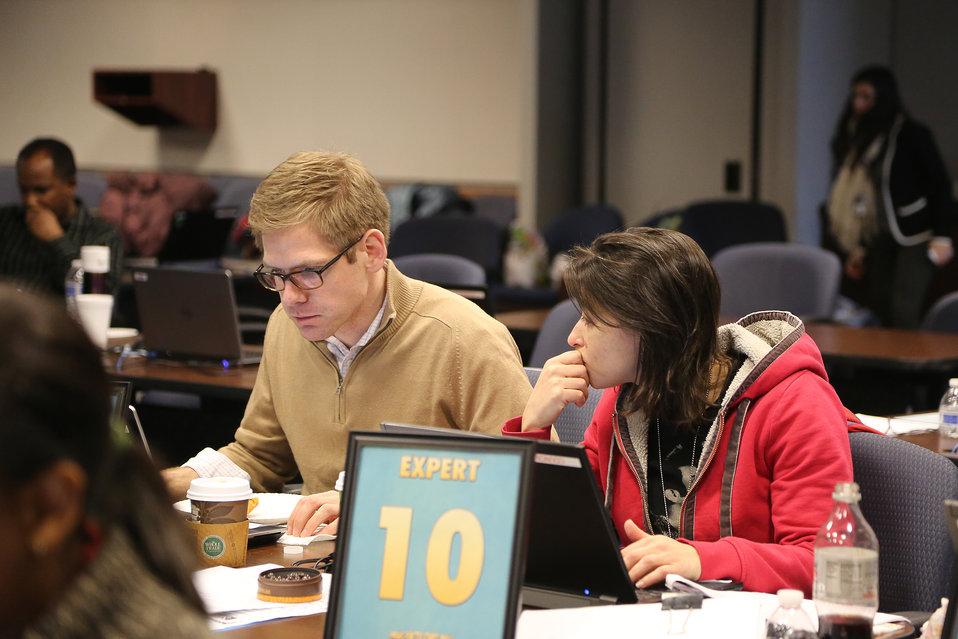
Scientists Chat with Kids During NDFW

Chat Day Event held by the National Institute on Drug Abuse during its National Drug Facts Week Jan. 27-Feb. 2, 2014. Scientists from NIDA and other agencies answered questions about drugs from teens around the world on Jan. 29th in Rockville, Maryland.